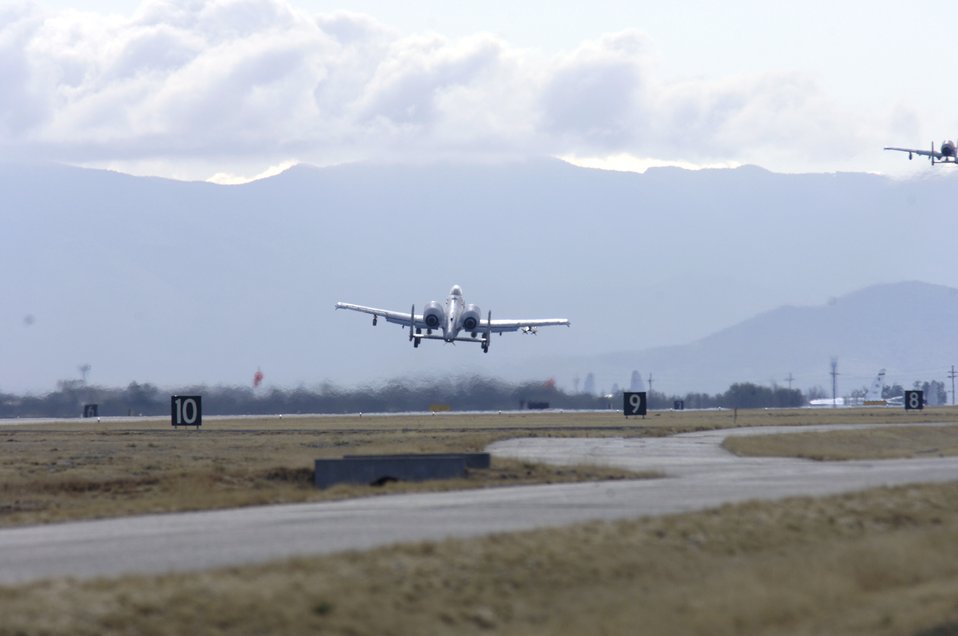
Bushwhacker tests wing

An A-10 Thunderbolt II from the 354th Fighter Squadron takes off to a simulated deployed location as a part of Bushwhacker 07-02 Jan. 21at Davis-Monthan Air Force Base, Ariz. Bushwacker 07-02 is an operational readiness exercise that tests the 355th Wing's ability to prepare deploy.